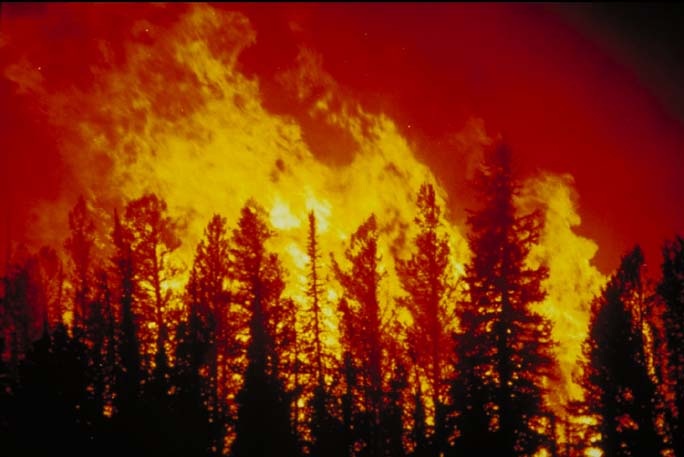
Wildland fire